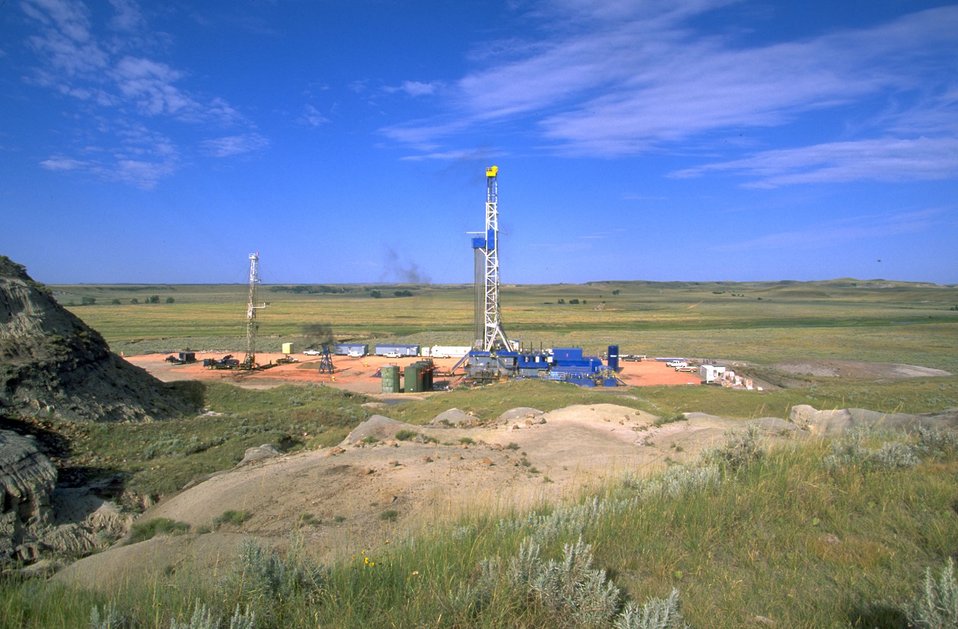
Drillings rig and workover rig on a single pad